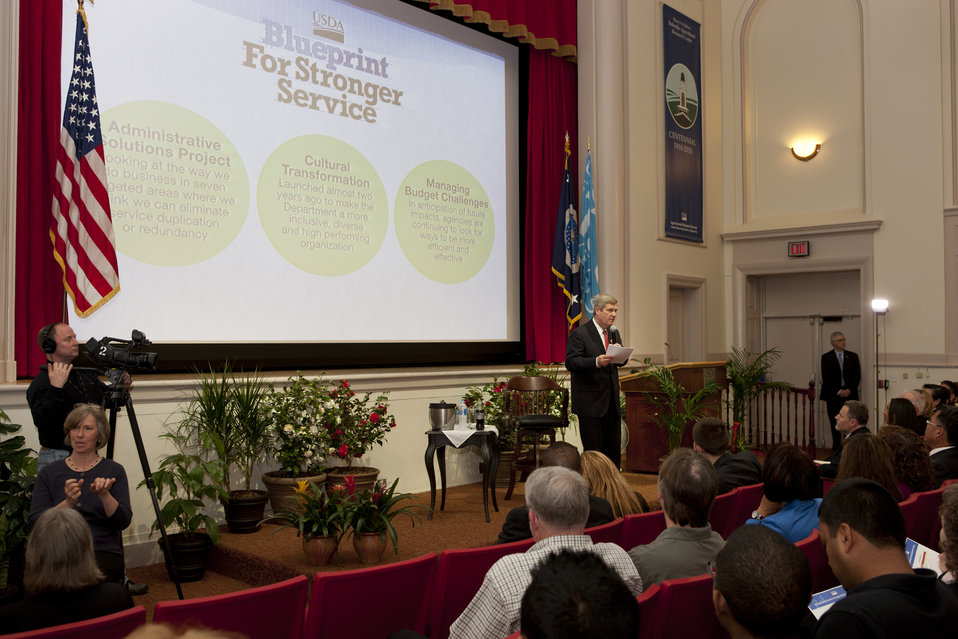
Agriculture Secretary Tom Vilsack speaks at the U.S. Department of Agriculture (USDA) Employees Ask the Secretary Session held at the USDA Carver Center in Beltsville, MD on Wednesday, March 21, 2012.